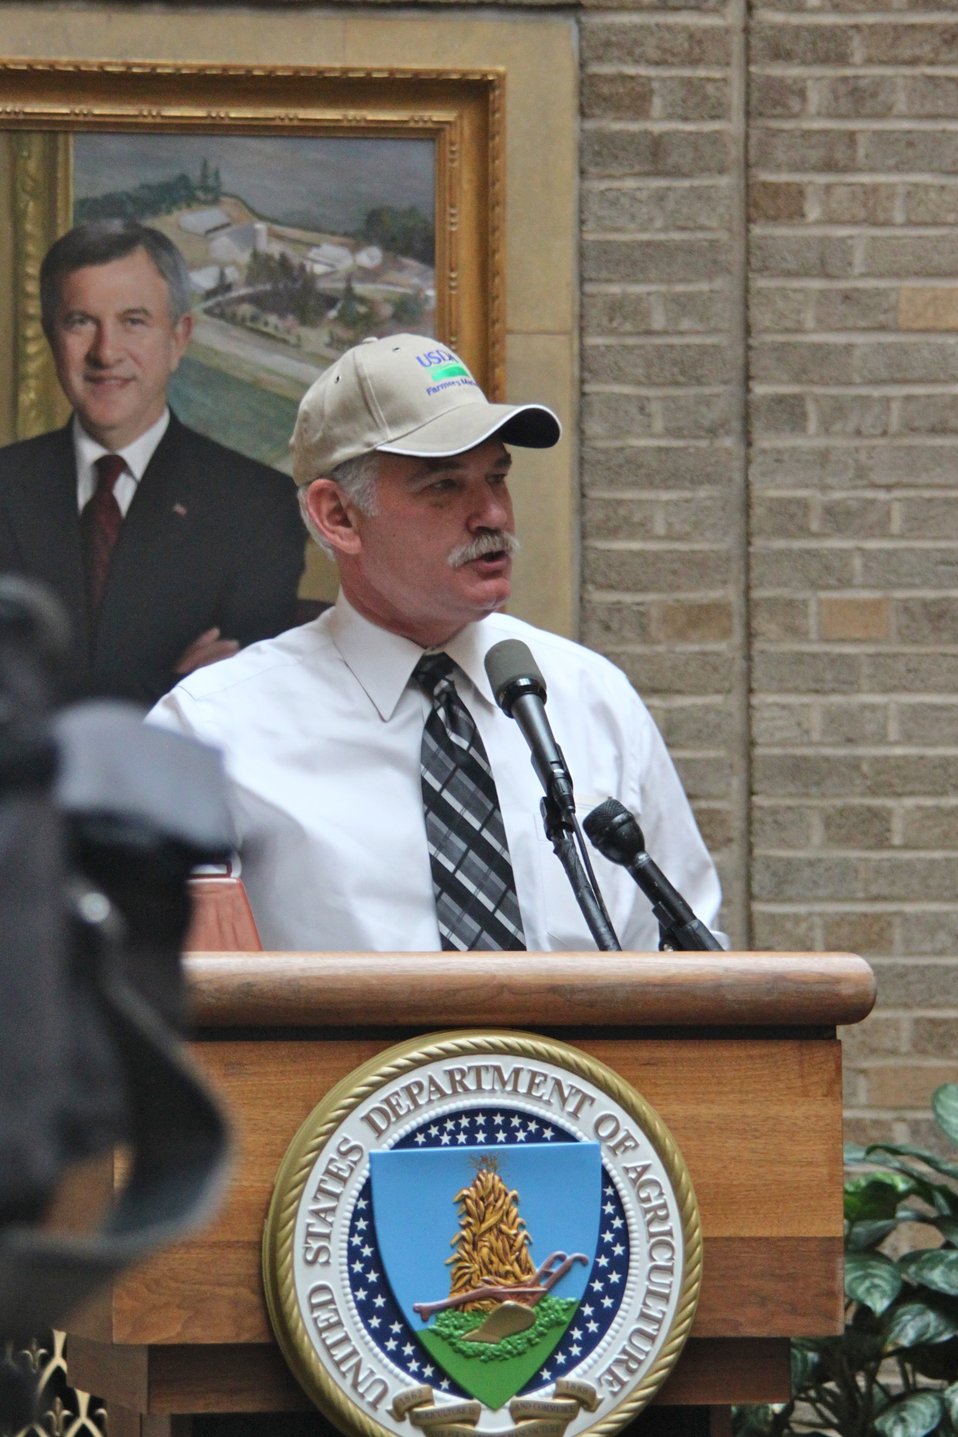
Acting Deputy Secretary Scuse

Agriculture Acting Deputy Secretary Michael Scuse recognizes the importance of farmers markets in his remarks during the opening of the U.S. Department of Agriculture's (USDA) Farmers Market opening ceremony on Friday, Jun. 7, 2013.